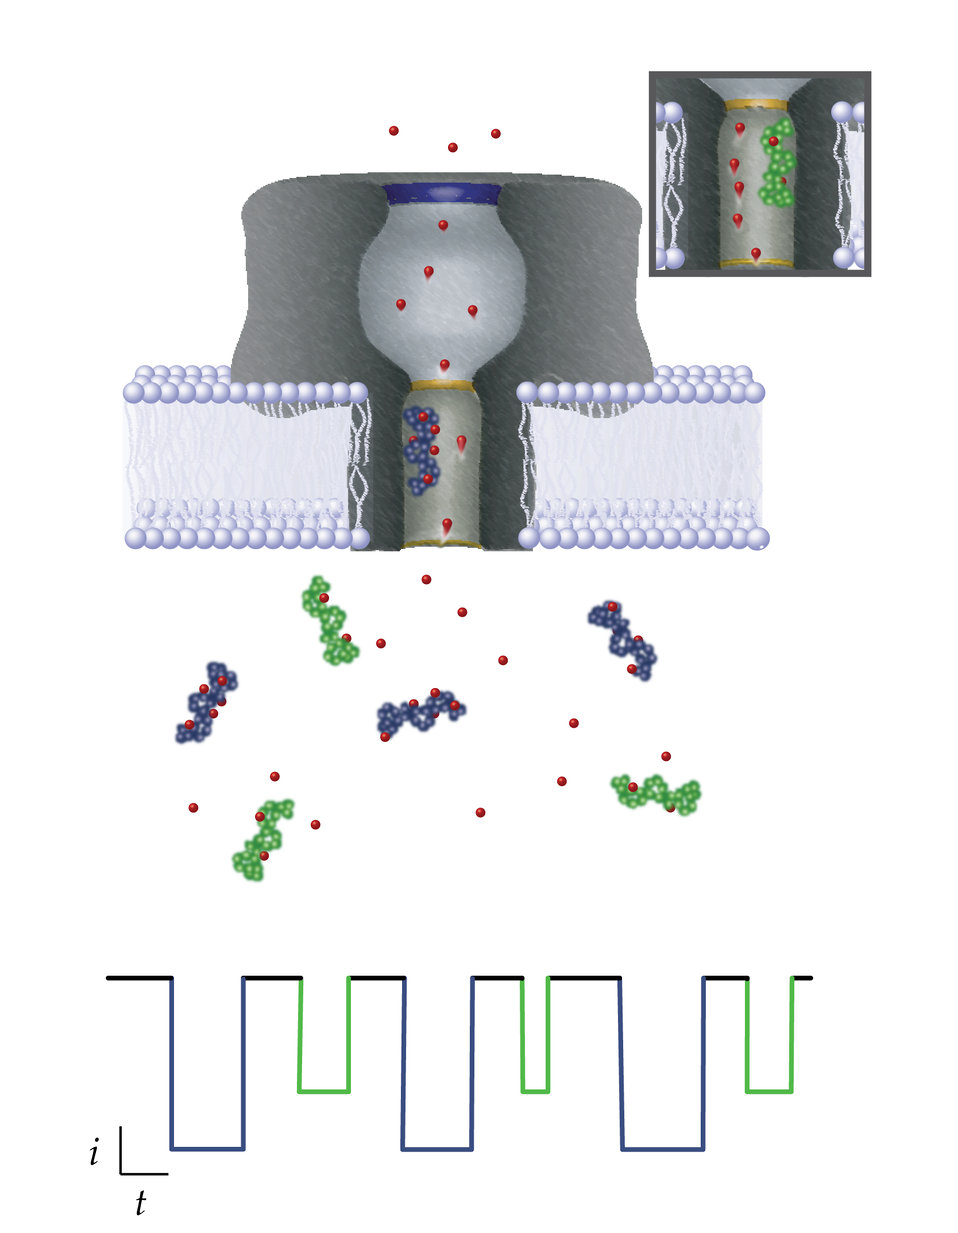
Nanopore-based single molecule mass spectrometry

Each molecule passing through the nanopore can be identified by monitoring the change it causes in an ionic current flowing across the membrane. When different molecules (purple and green objects) enter the pore (green shown in inset), each reduces the current by a certain amount and time period (shown by corresponding color scheme in the current diagram below), depending on both its size and ability to attract nearby ions (red dots). The NIST model can be used to extract this information, which might be used to identify and characterize biomarkers for medical applications.